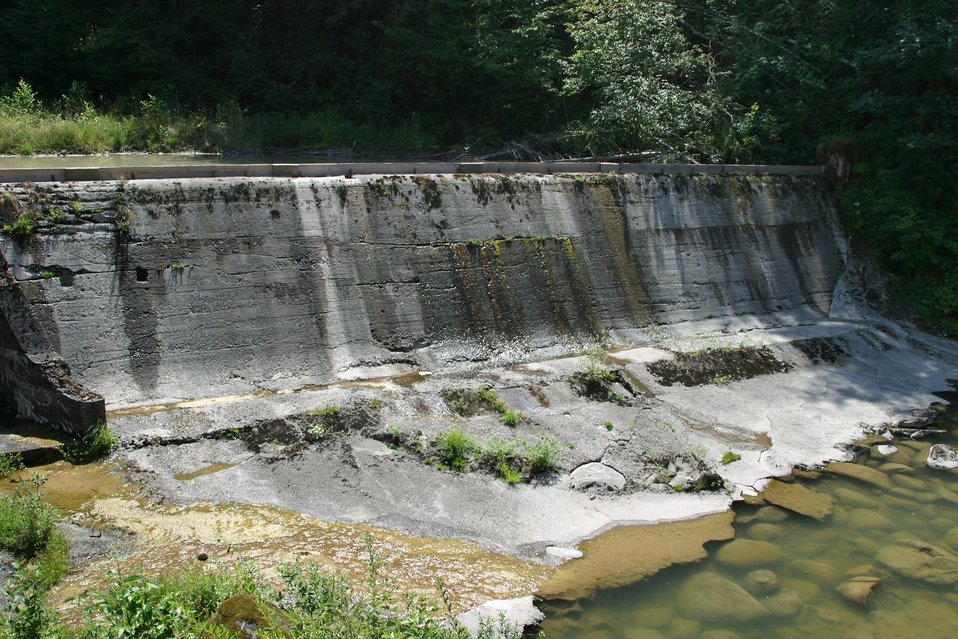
Little Sandy Dam is scheduled to be removed in 2007.